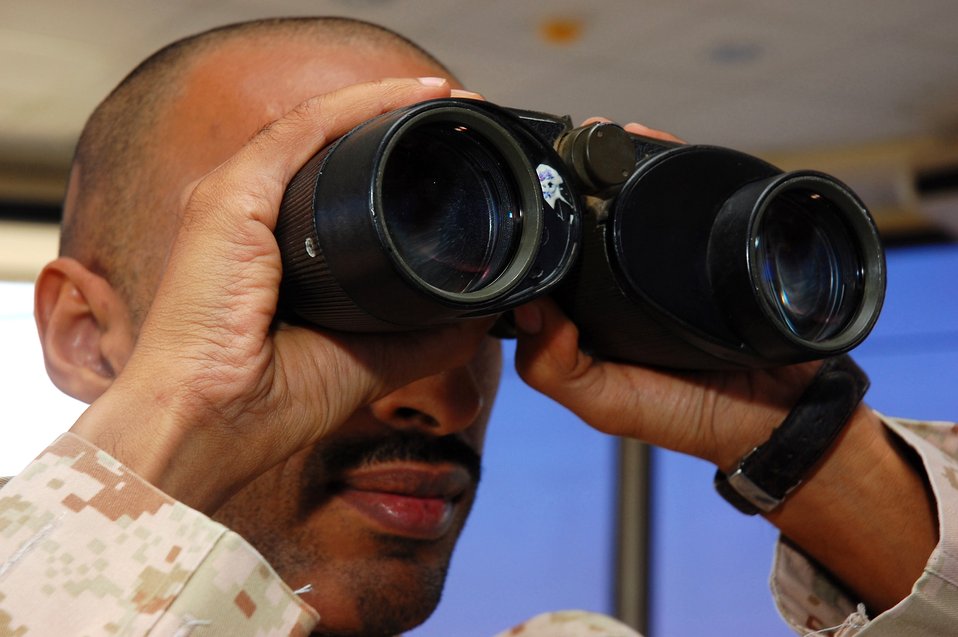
In control

Sgt. Abdullah Al. Ajmi scans the horizon for an inbound aircraft Nov. 2 in Southwest Asia. Sergeant Ajmi, is a host nation air traffic controller, is responsible for the safe and expeditious flow of air traffic at the base.